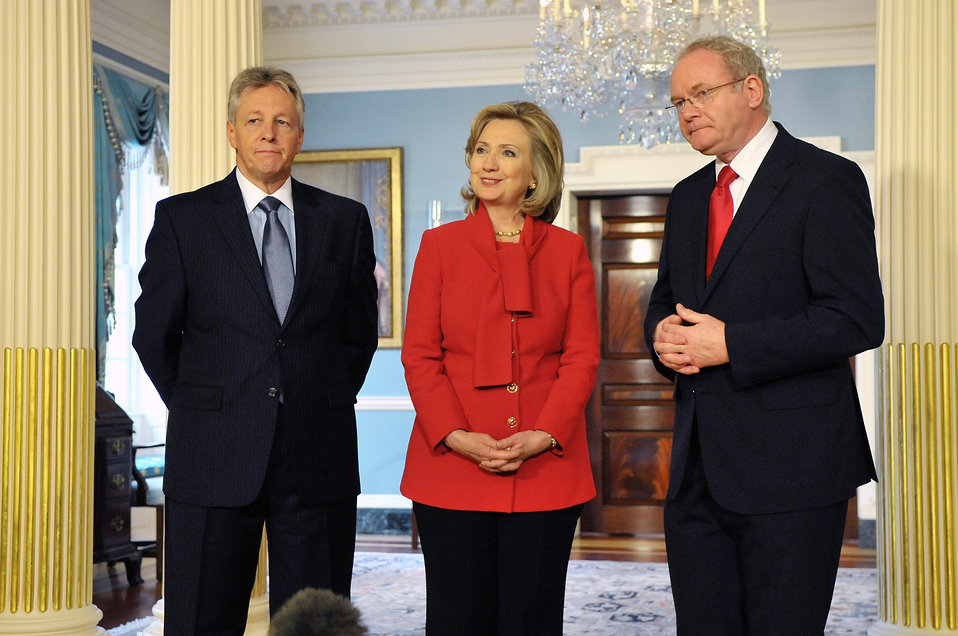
Secretary Clinton Meets With Northern Ireland First Minister Robinson and Deputy First Minister McGuinness

U.S. Secretary of State Hillary Rodham Clinton meets with Northern Ireland First Minister Peter Robinson, and deputy First Minister Martin McGuinnessat the U.S. Department of State in Washington, D.C., on October 19, 2010.